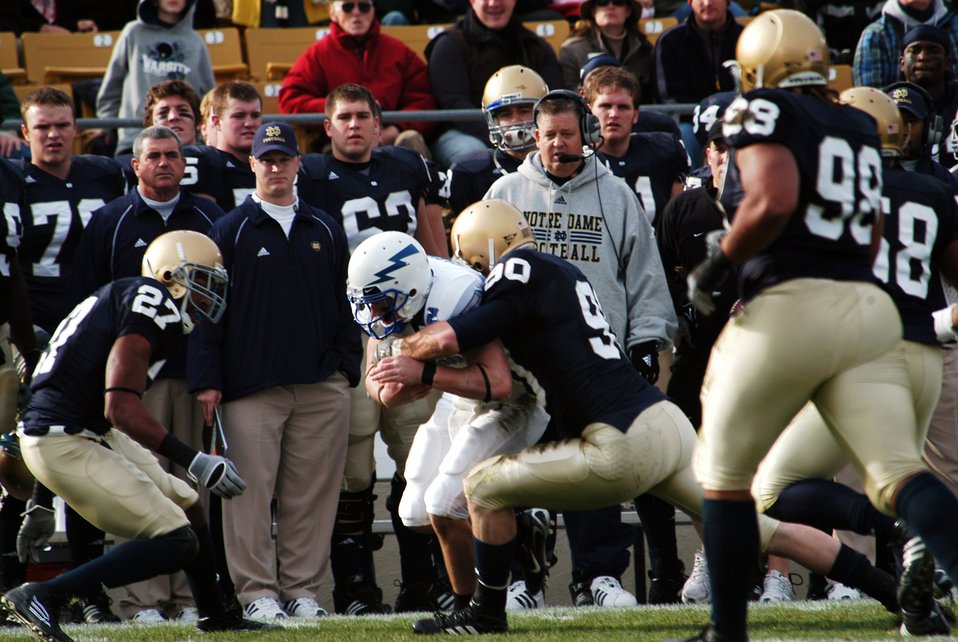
Football: Falcons outfight Irish, 41-24

U.S. Air Force Academy Falcon quarterback Shaun Carney is wrapped up in front of the Notre Dame sideline by Fighting Irish outside linebacker John Ryan, 90, during Air Force's 41-24 win Nov. 10 at Notre Dame Stadium in Indiana. Carney rushed nine times for 41 yards and a touchdown plus had the game's longest run of 21 yards.